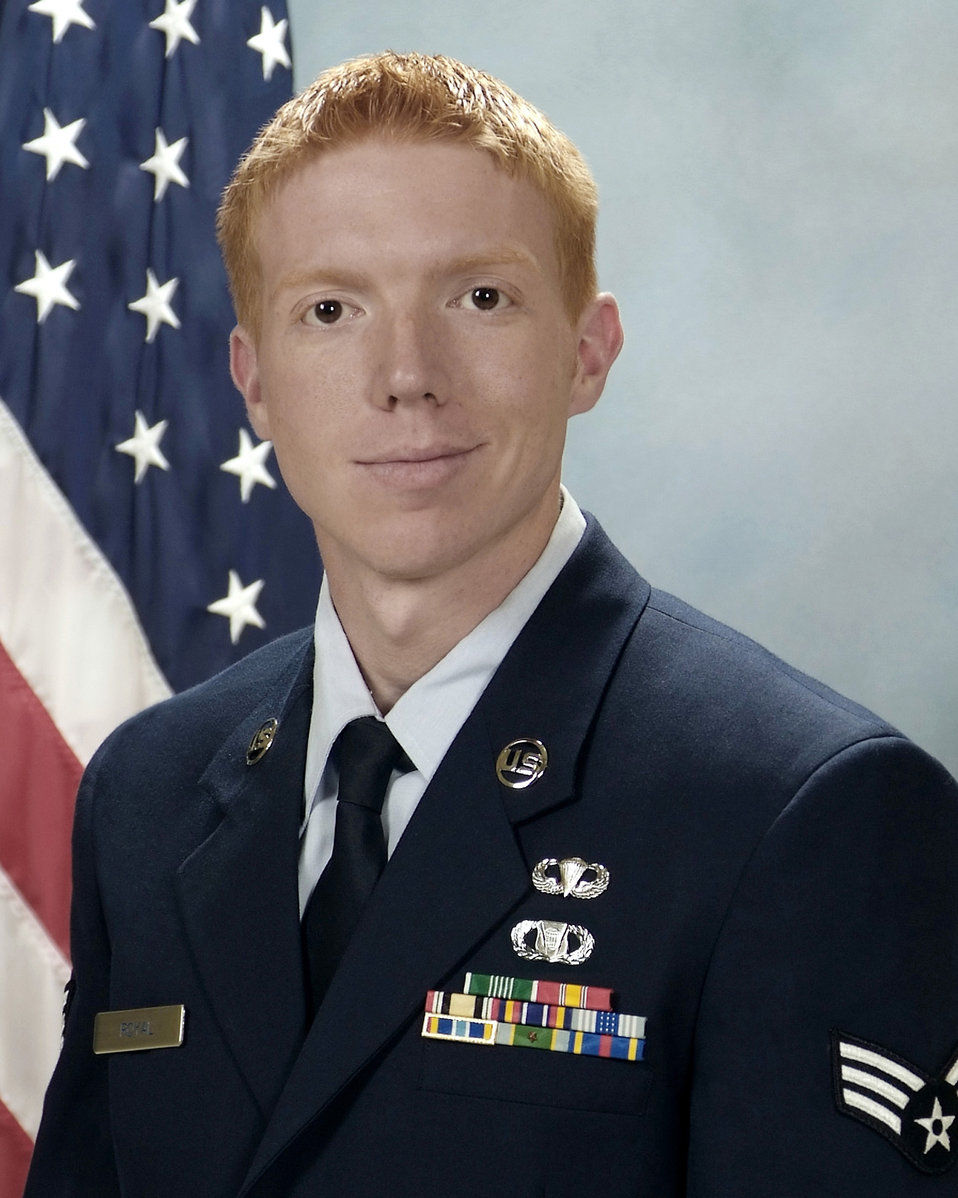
12 Outstanding Airmen of the Year named

Senior Airman Alexander Royal is a Tactical Air Control Party member with the 13th Air Support Operations Squadron, Fort Carson, Colo. Airman Royal deployed with the 1st Battalion, 502nd Infantry Regiment and participated in 22 named operations and 47 raids in the volatile Shulla District of Baghdad. The Air Force Chief of Staff reviews the selections. The selections for the 2009 12 Outstanding Airmen of the Year were announced July 2 by Air Force officials at Randolph Air Force Base, Texas.